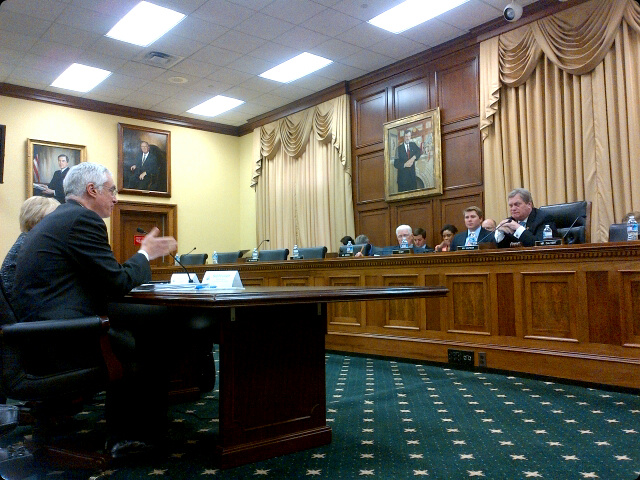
May 8, 2013 - Acting Administrator Bob Perciasepe testifying before the House Appropriations Committee

U.S. EPA Acting Administrator Bob Perciasepe testified before the House Appropriations Committee on EPA’s proposed FY 2014 budget (May 8th).